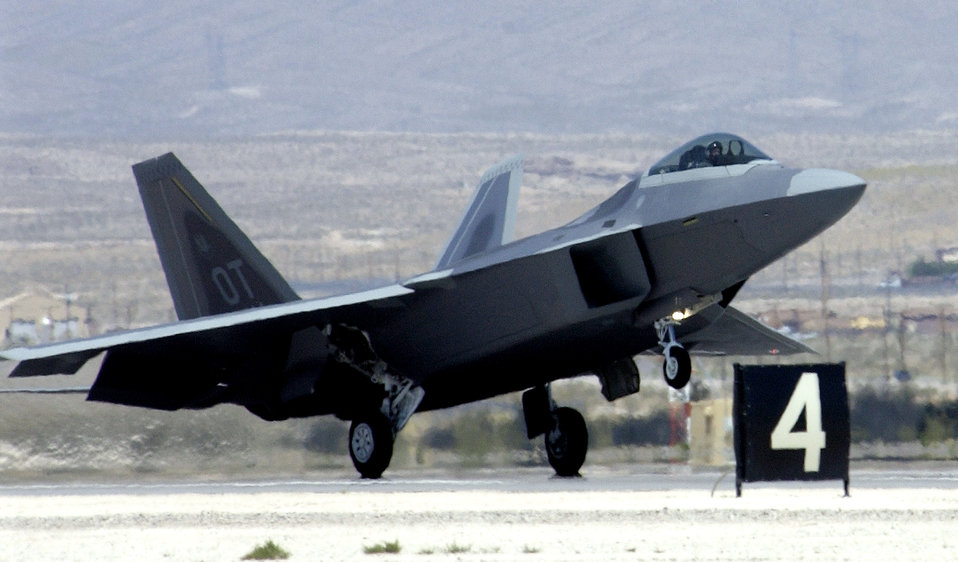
Raptor three

NELLIS AIR FORCE BASE, Nev. -- The third F/A-22 Raptor arrives here May 29, 2003. In the next few months three more Raptors will arrive here from Edwards Air Force Base, Calif. The F/A-22 Raptor is integral to the Air Force's tactical aircraft modernization program and a critical contributor to America's joint warfighting capabilities.